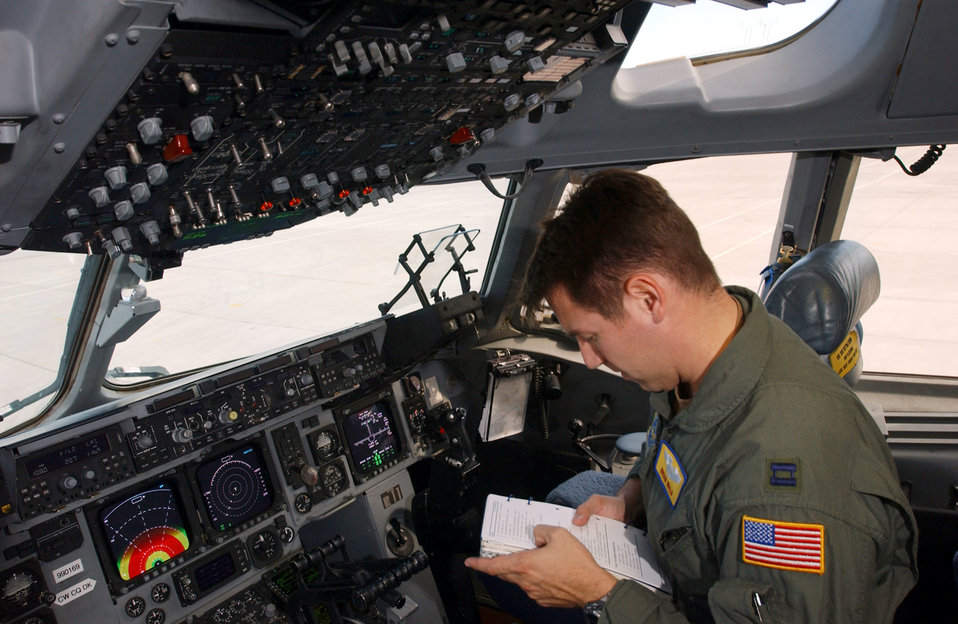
Preflight inspection

NELLIS AIR FORCE BASE, Nev. -- Capt. Brian Wald reviews his preflight checklists before flying a C-17 Globemaster III during a mission-employment exercise here Dec. 10. This is the first year a C-17 has been included in the exercise. Wald is a student in the first C-17 Weapons Instructor Course.